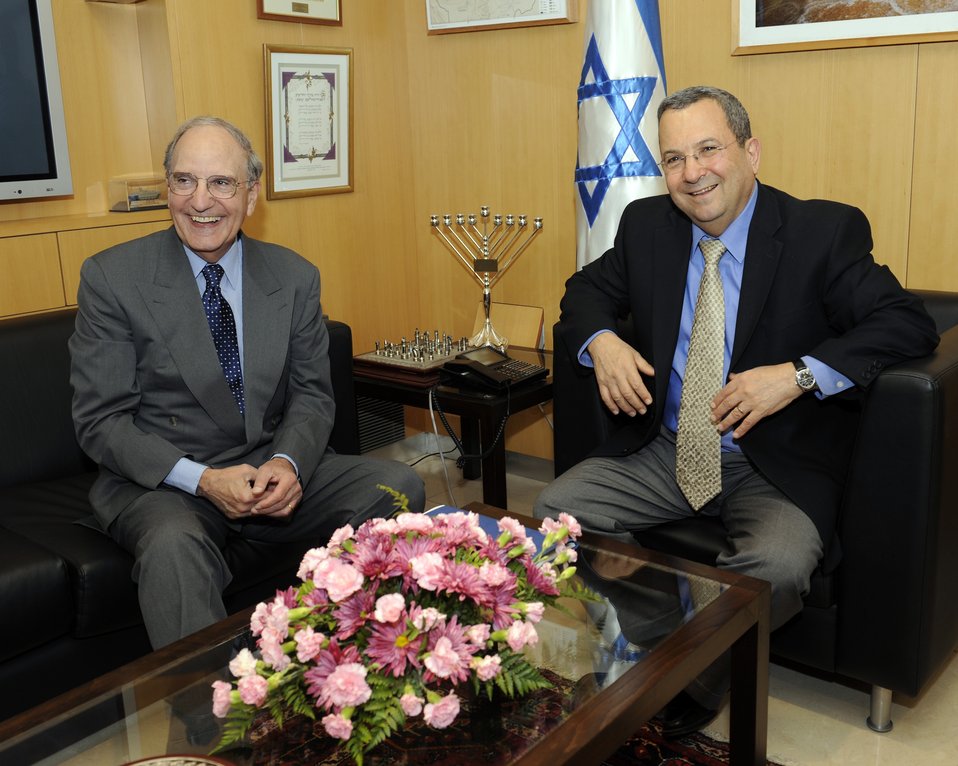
Special Envoy Mitchell Meets With Israeli Foreign Minister Barak

Special Envoy for Middle East Peace George Mitchell meets with Israeli Foreign Minister Ehud Barak at the Israeli Ministry of Defense, Tel Aviv, Israel, May 6, 2010.